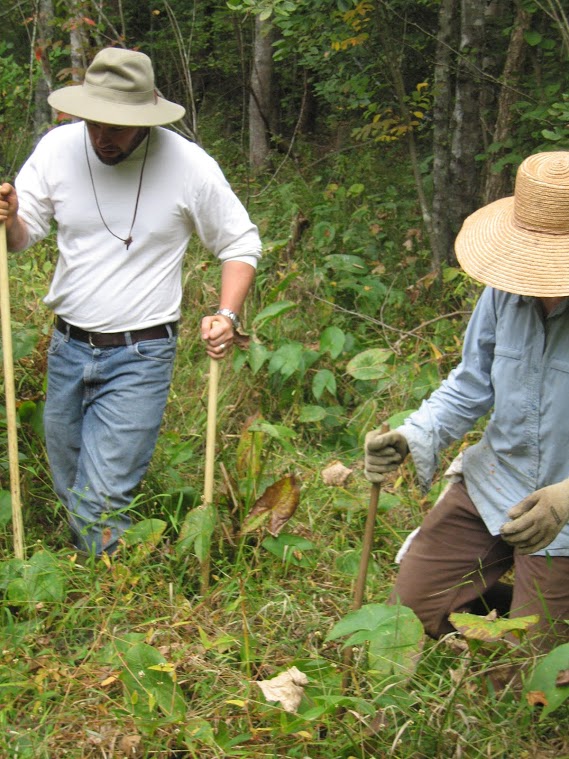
Bog turtle

Scientific name: Clemmys muhlenbergii
Status: Threatened and similarity of appearance

Troy Wilson and Gabrielle Graeter search for bog turtles.